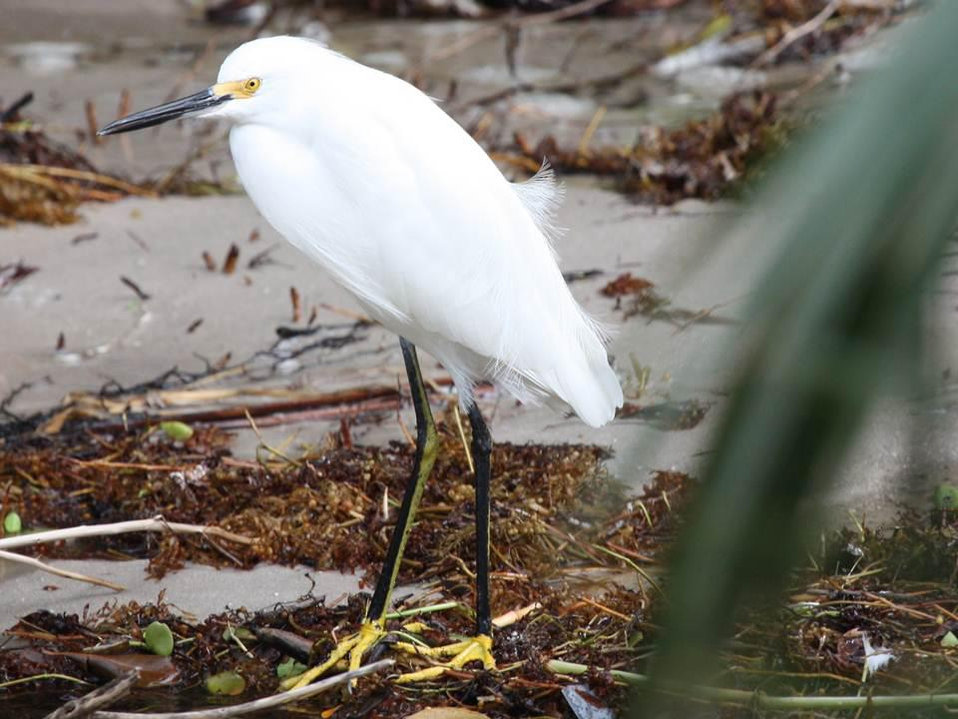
snowy egret

Pelican Island National Wildlife Refuge, FL
January 2011